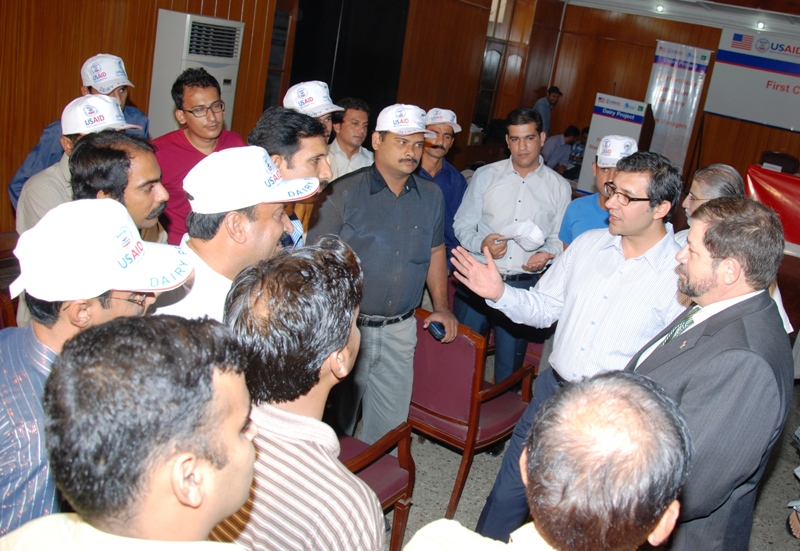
2 - USAID Mission Director Punjab Mr. Jeffrey Bakken interacting with the Dairy Project-trained dairy farm managers on October 4, 2012.